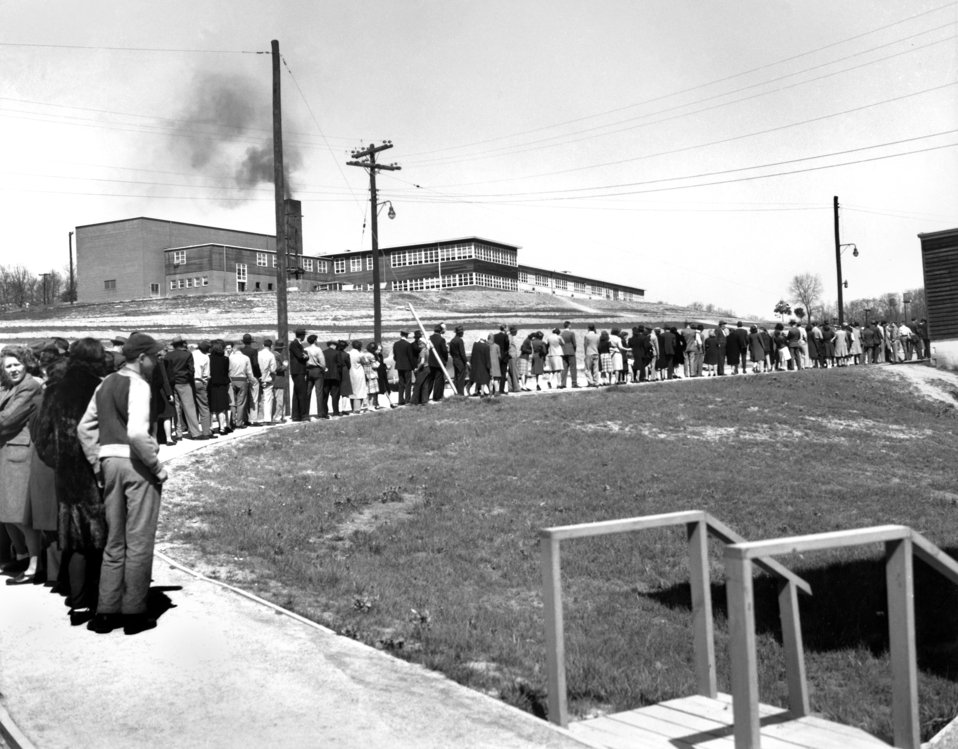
Line for Cigarettes at Williams Drug Store- Jackson Square 1945 Oak Ridge

pro362-7 DOE photo Ed Westcott 3-11-1945 Oak Ridge Tennessee